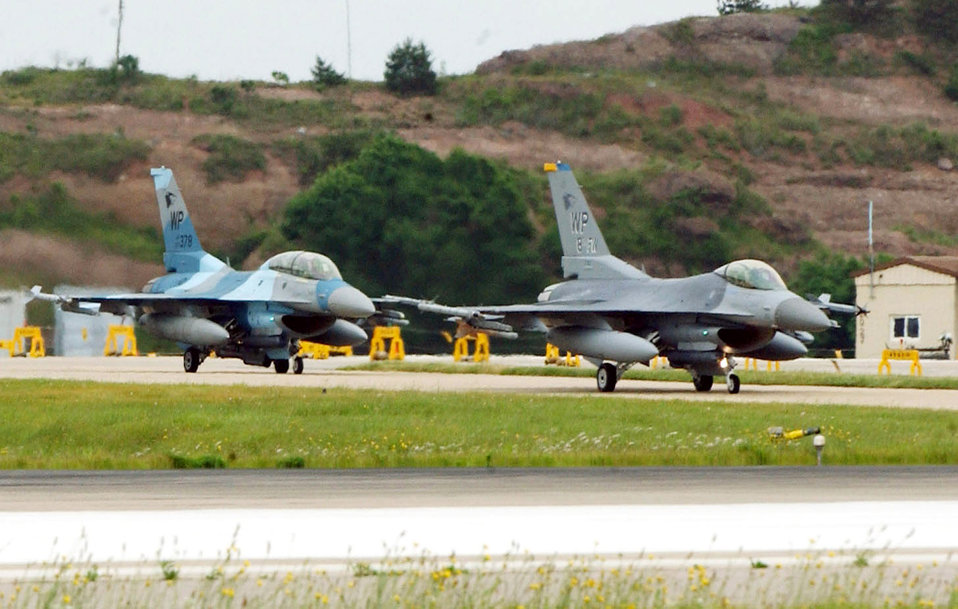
U.S., Korean forces conclude flying exercise

Aircraft from the 8th Fighter Wing stand by before takeoff June 14 at Kunsan Air Base, South Korea. Pilots from the 35th and 80th Fighter Squadrons teamed with Osan Air Base and Republic of Korea Air Force pilots for a combined large force exercise, intended to increase teamwork and communication.